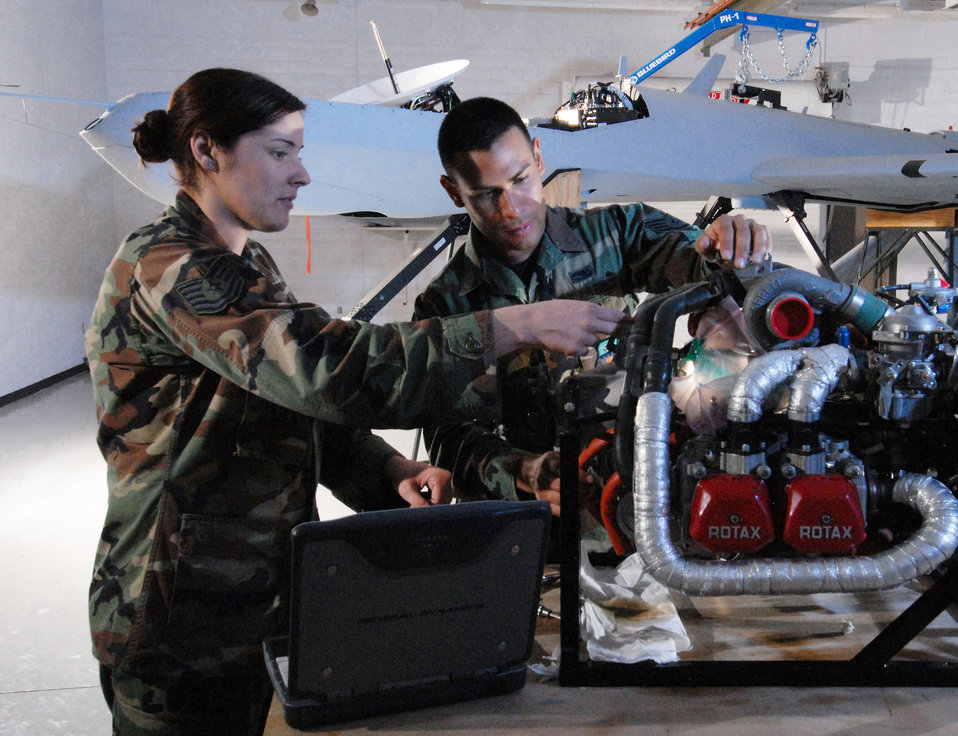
Predator maintenance

Tech. Sgt. Rebecca Hatfield (left), an instructor with Field Training Detachment 26 of the California Air National Guard's 163rd Maintenance Group, reviews procedures Oct. 15 with Staff Sgt. Carlos Barrera to install an oil pump on the engine of an MQ-1 Predator unmanned aircraft. Sergeant Barrera is a crew chief assigned to the 163rd Reconnaissance Wing at March Air Reserve Base, Calif. Airmen with Det. 26 train active duty, Reserve and Air National Guard personnel on Predator maintenance operations.